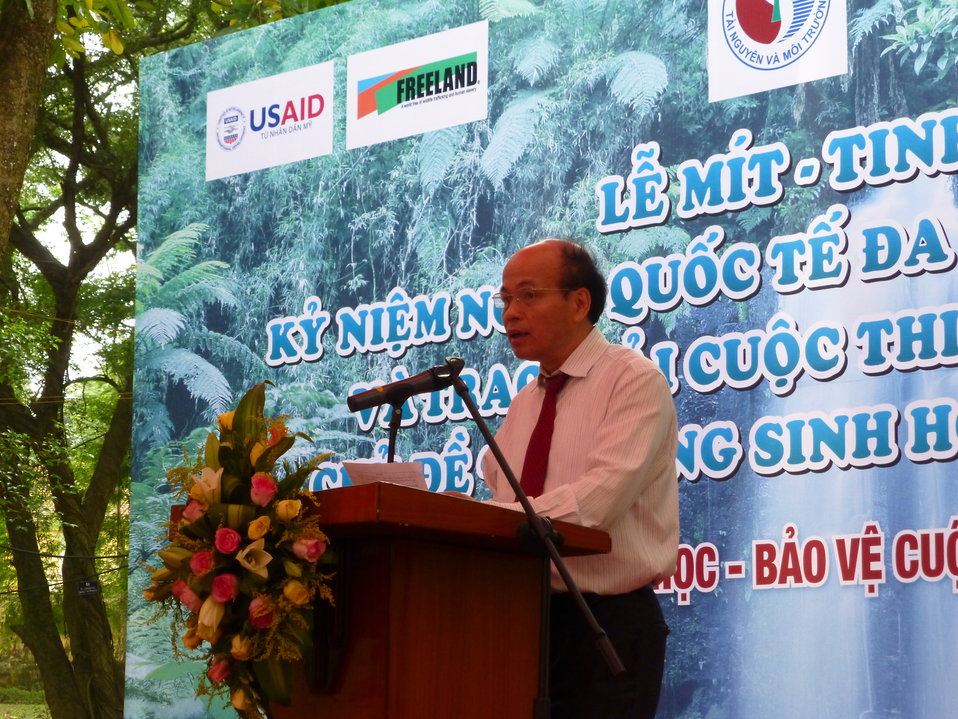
USAID Supports International Day for Biological Diversity in Hanoi